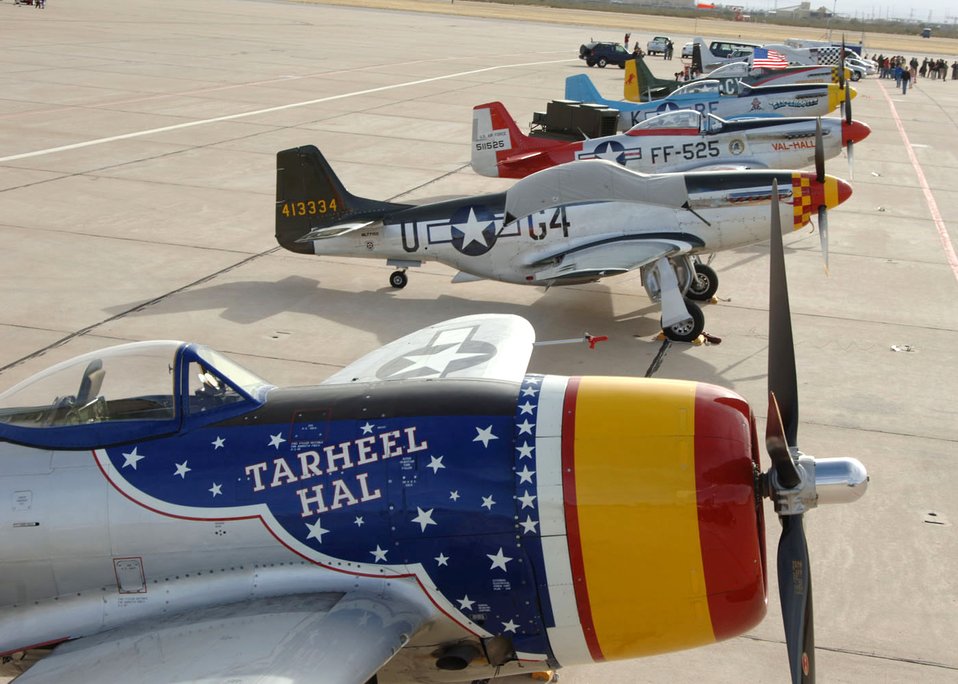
Heritage Conference mixes old with new

A P-47 Thunderbolt and several P-51 Mustangs rest on the Davis-Monthan Air Force Base, Ariz., ramp March 4 after a busy few days at the 2007 Heritage Conference. The conference provided an opportunity for Air Combat Command demonstration pilots to train together with modern and historic military aircraft.